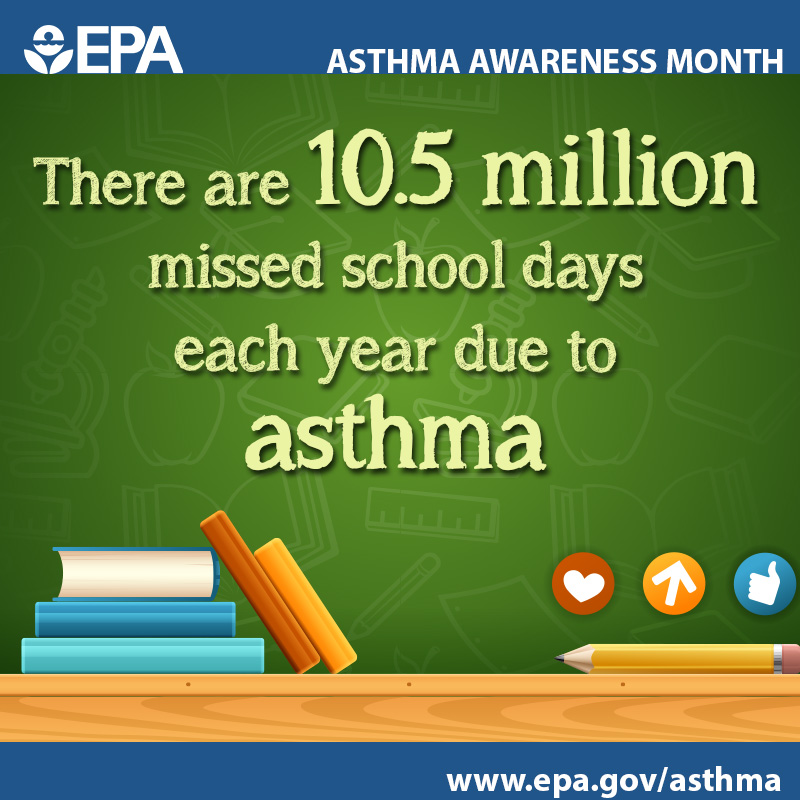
10.5 million missed school days

There are 10.5 million missed school days each year due to asthma. Create an asthma action plan for your child with your doctor to reduce the number of attacks & missed school days.